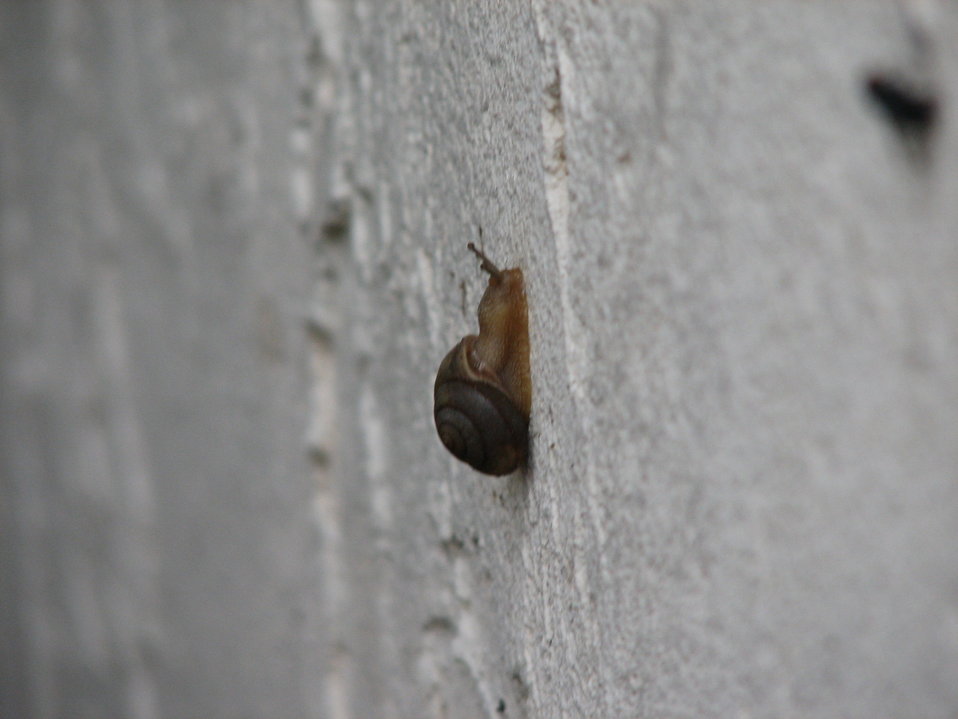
Uploaded by request of Jennifer Hicks

Taken in Lakeland, Florida

While shooting for my current digital photography class, I came across this snail and fly trying to escape the rain.